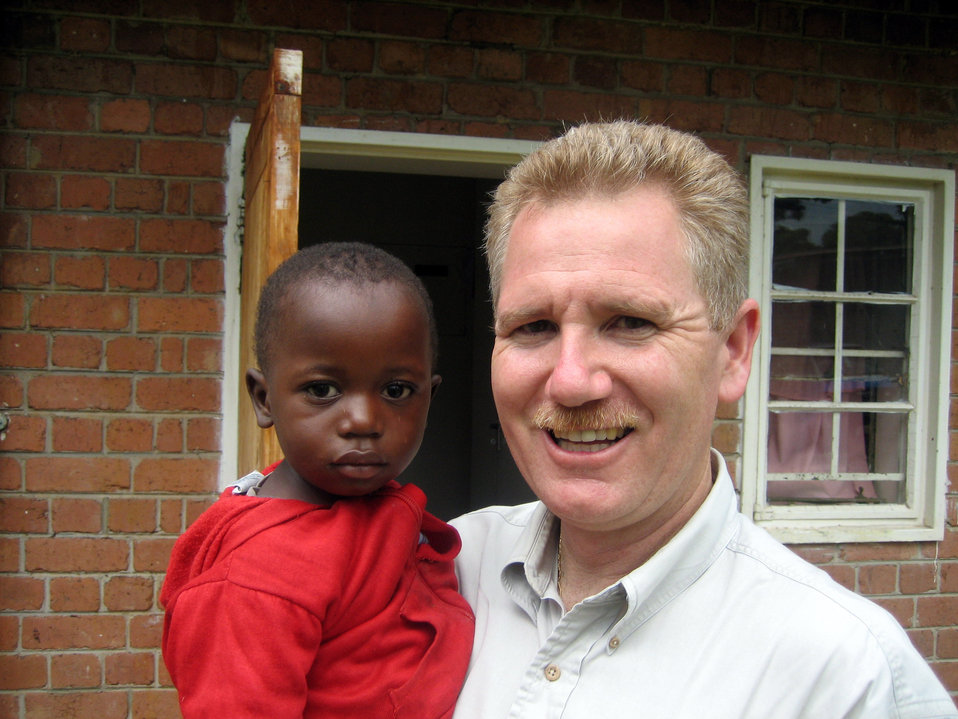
Humanitarian in action

ZAMBIA (AFPN) -- Lt. Col. (Dr.) Kirk Milhoan plays with Joseph, a 9-year-old HIV-positive child, in the first AIDS orphanage built in Zambia.